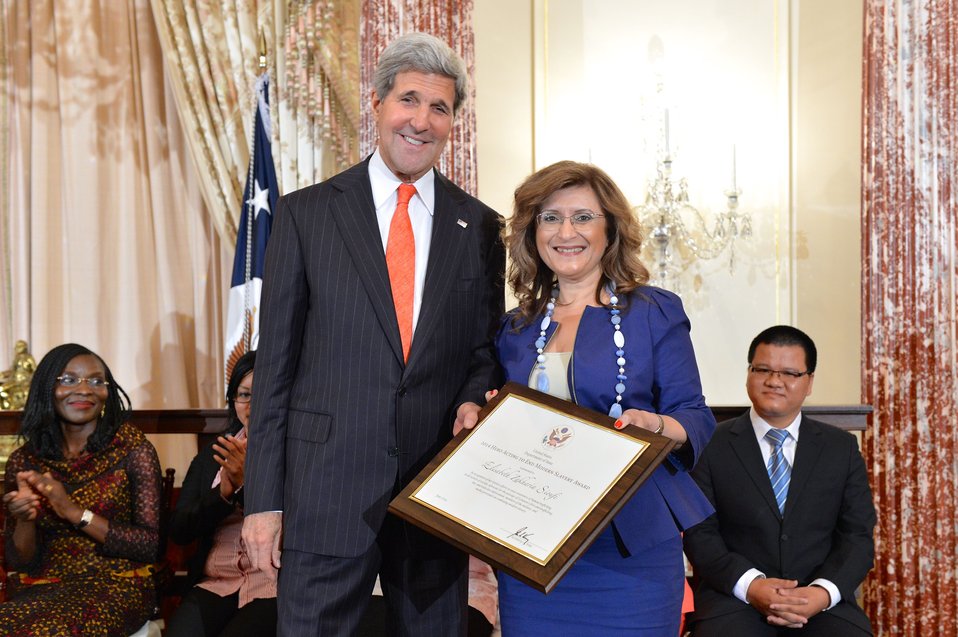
Secretary Kerry With TIP Hero Elisabeth Sioufi of Lebanon

U.S. Secretary of State John Kerry recognizes Elisabeth Sioufi of Lebanon as a 2014 Trafficking in Persons Report Hero at the U.S. Department of State in Washington, D.C., on June 20, 2014. Elisabeth Sioufi, director of the Beirut Bar Association’s Institute for Human Rights, relentlessly advocates for and raises awareness about victims of human trafficking.